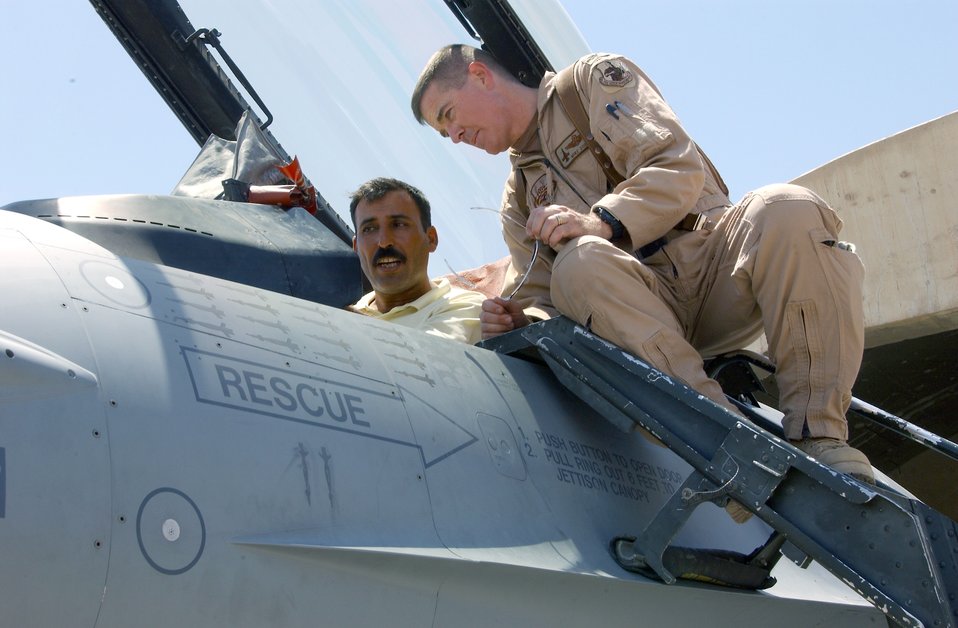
Iraqi, American fighter pilots band together

BALAD AIR BASE, Iraq -- Col. Mike Dubie (right) shows an Iraqi fighter pilot the controls of an F-16 Fighting Falcon during a visit here July 20. Six Iraqi fighter pilots stationed here before Operation Iraqi Freedom had lunch with American pilots and took pictures in front of an aircraft they had flown against for more than a decade. Colonel Dubie is the 332nd Air Expeditionary Wing director of staff.